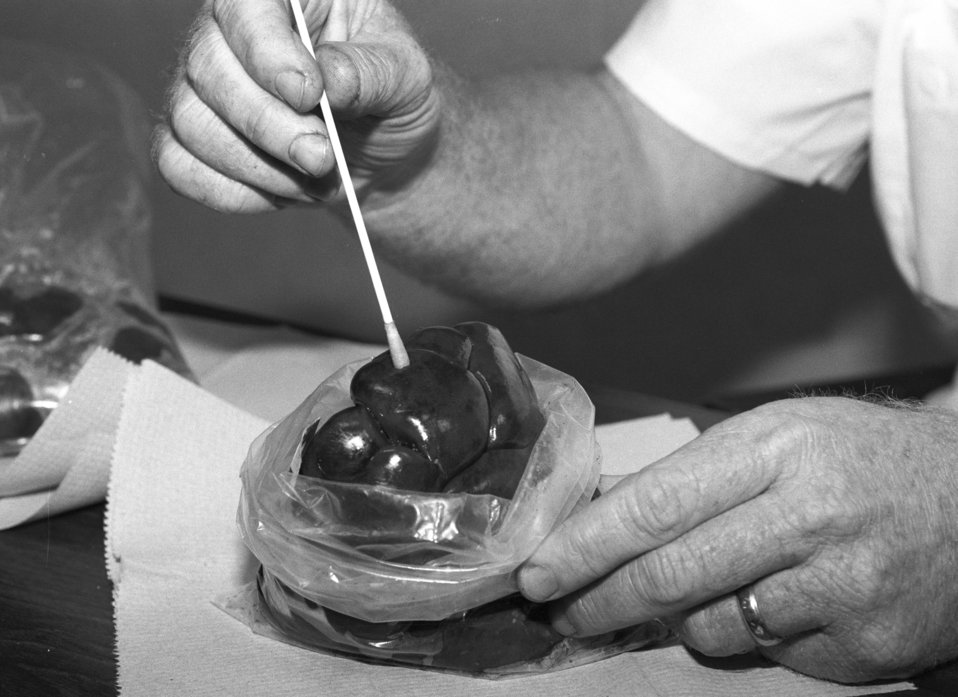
U.S. Department of Agriculture (USDA) Food Safety Inspection Service (FSIS) inspectors swab beef kidneys for testing using a Streamline Inspection System (SIS) at a processing plant in Plainview, TX on January 22, 1991.